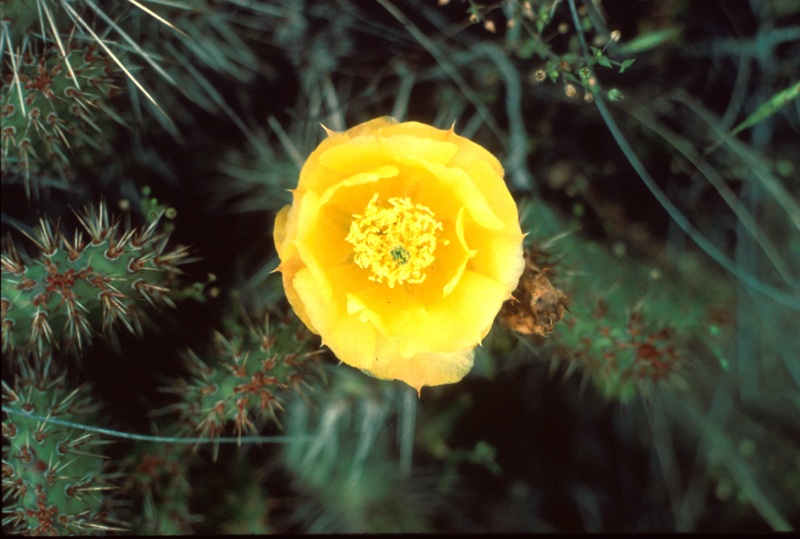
Flower Upper Columbia-Salmon Clearwater District